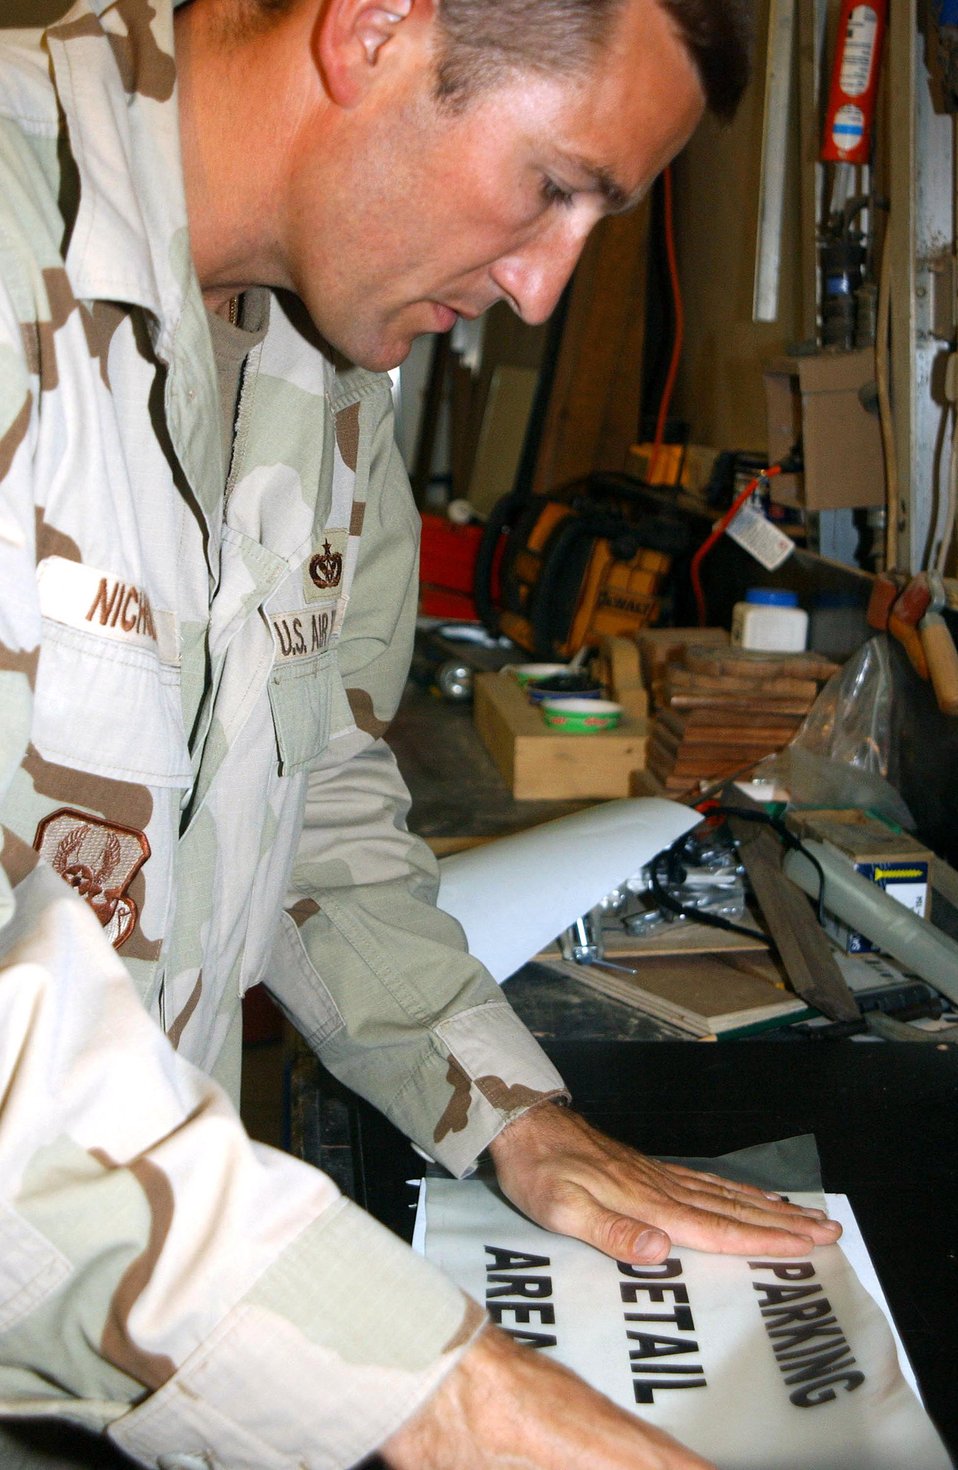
Engineers at work

SOUTHWEST ASIA (AFPN) -- Master Sgt. Stephen Nicholas creates a parking sign for one of the facilities here. To create signs, Sergeant Nicholas designs the lettering on a computer, cuts sheet metal to an appropriate size and shape, then applies the lettering and protective laminate. Sergeant Nicholas and other structural maintenance technicians maintain and repair hundreds of buildings here. He is an Air Force Reservist deployed from Selfridge Air National Guard Base, Mich.